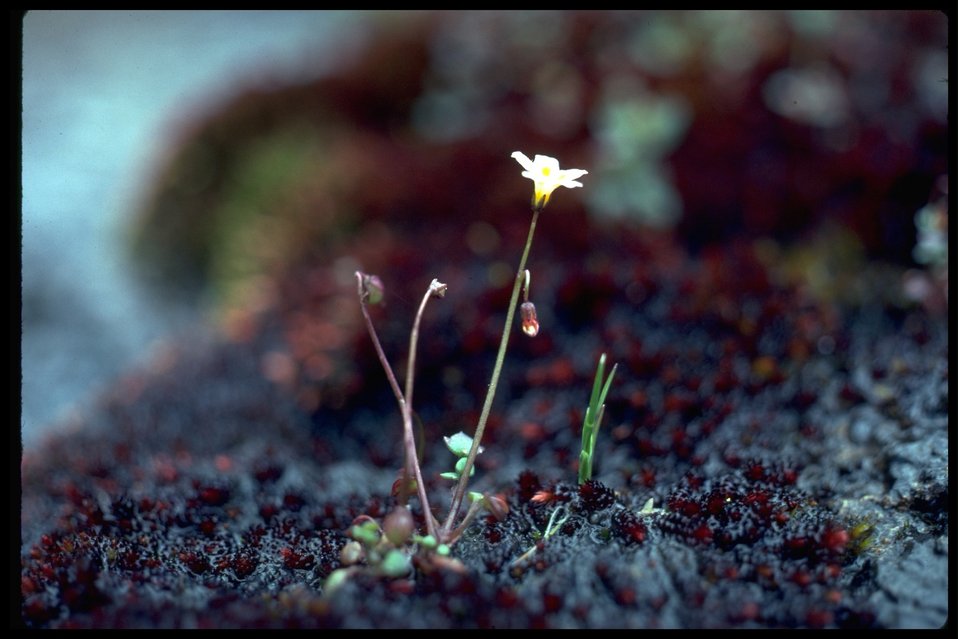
Romanzoffia thompsonii, more commonly known as Thompson's Mistmaiden.